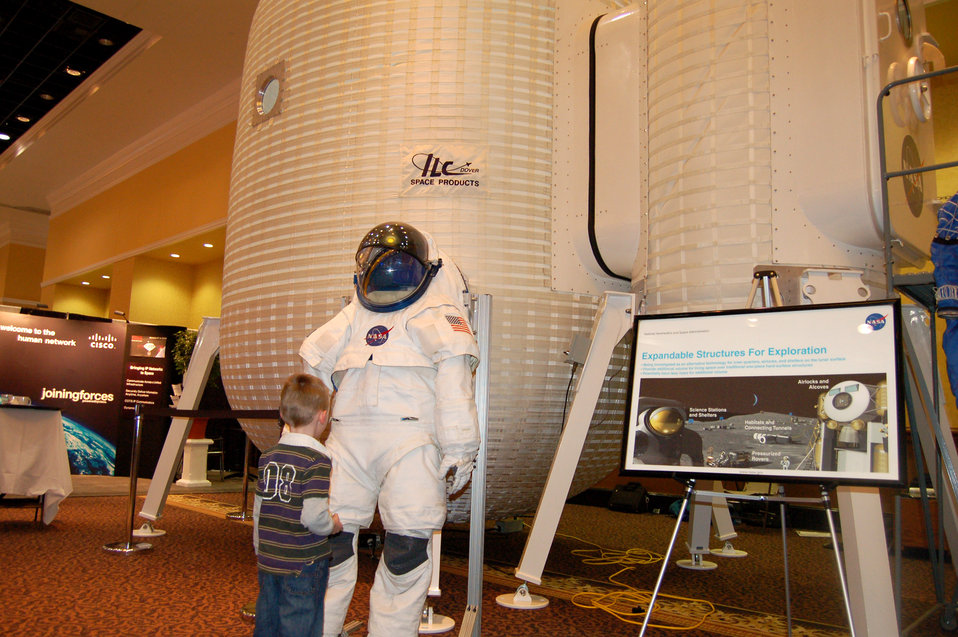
PACAF commander stresses importance of space

Reid Sherman looks up at a display during the 23rd National Space Symposium April 12 at the Broadmoor in Colorado Springs, Colo. In addition to the exhibits, there were numerous guest speakers at the event.